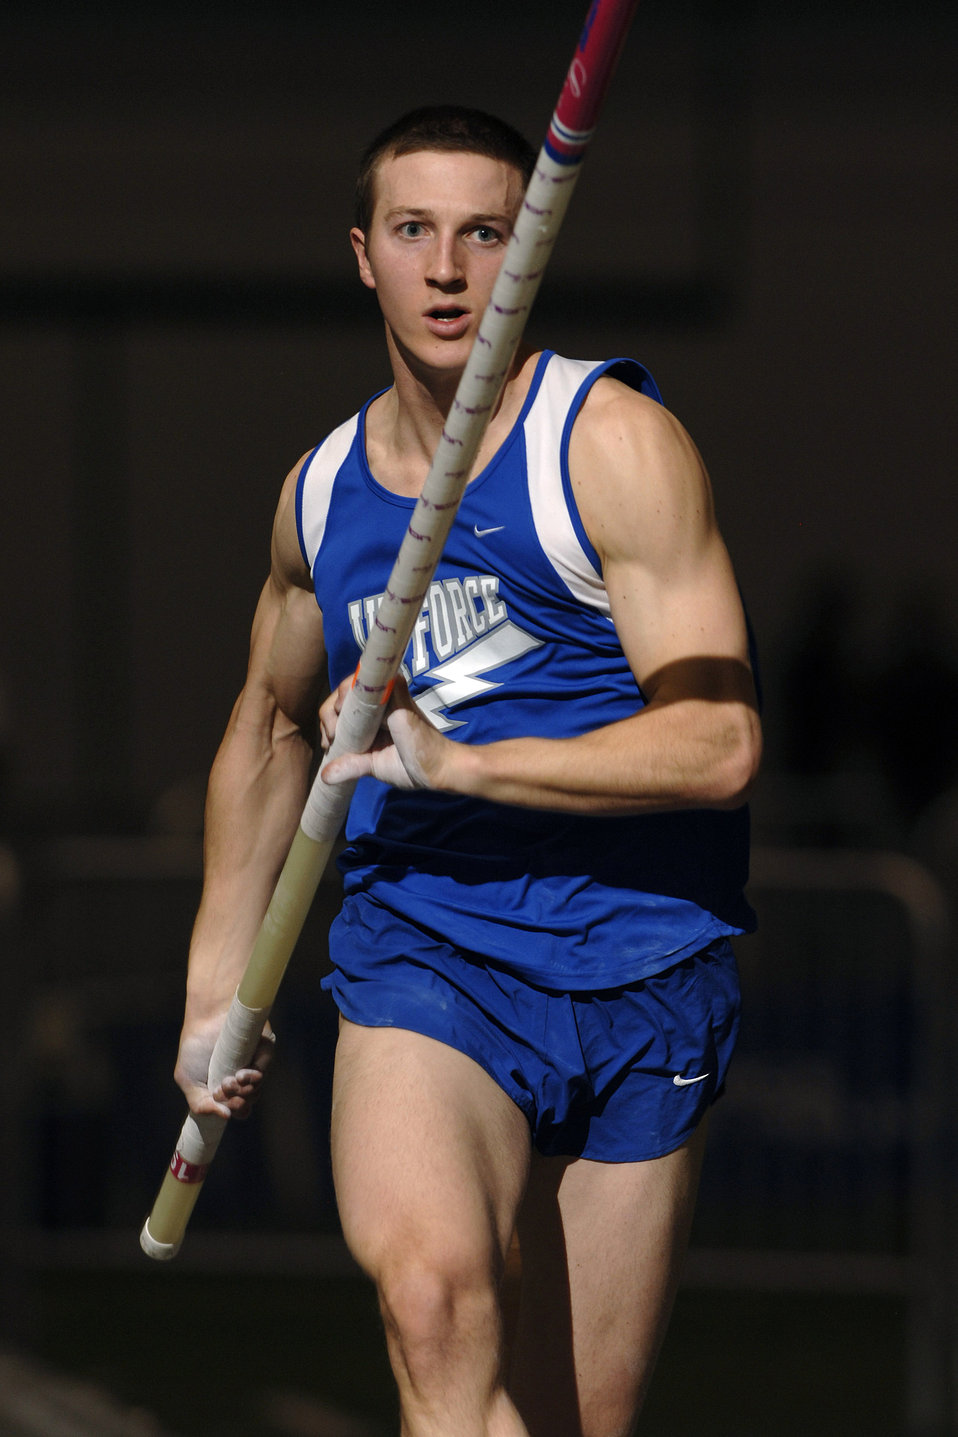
Down the runway I go

U.S. Air Force Academy Falcon sophomore Nick Frawley speeds down the runway in the pole vault competition held during the Air Force All-Comers meet Jan. 13 at Colorado Springs, Colo. Frawley was the top collegiate finisher in the pole vault, clearing 16 feet 6 3/4 inches.